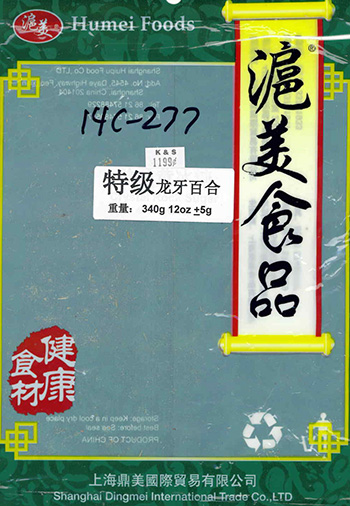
RECALLED – Humei Foods

February 4, 2014 – Product Recall – Humei Trading Inc. Issues Alert on Undeclared Sulfites in 'Dried Lily'.